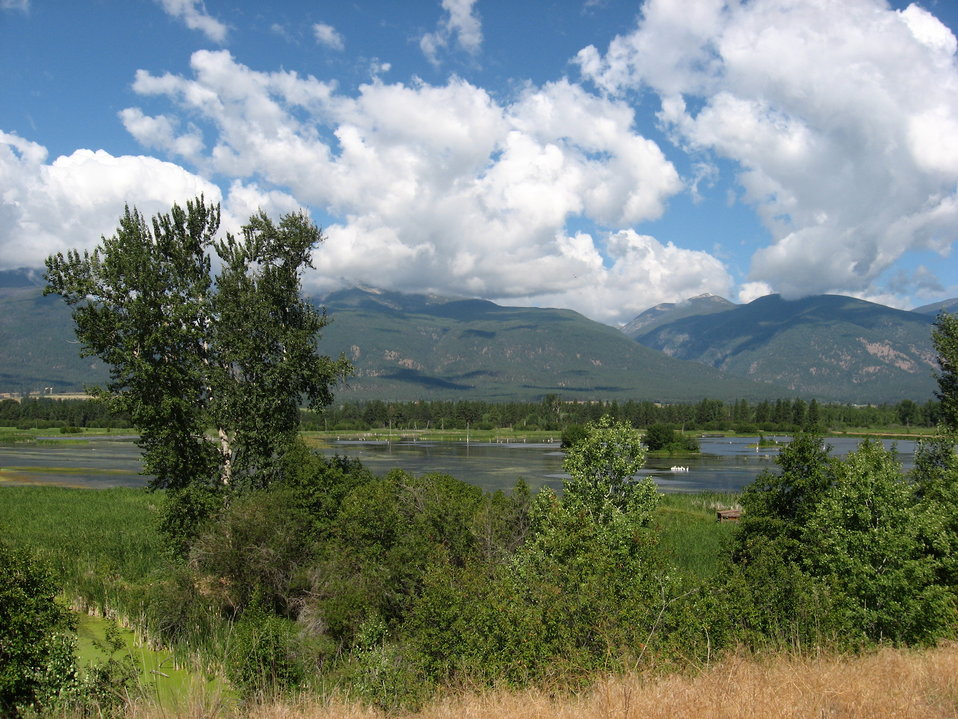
Pond 10

View of Pond 10 looking west from Refuge Service Road.